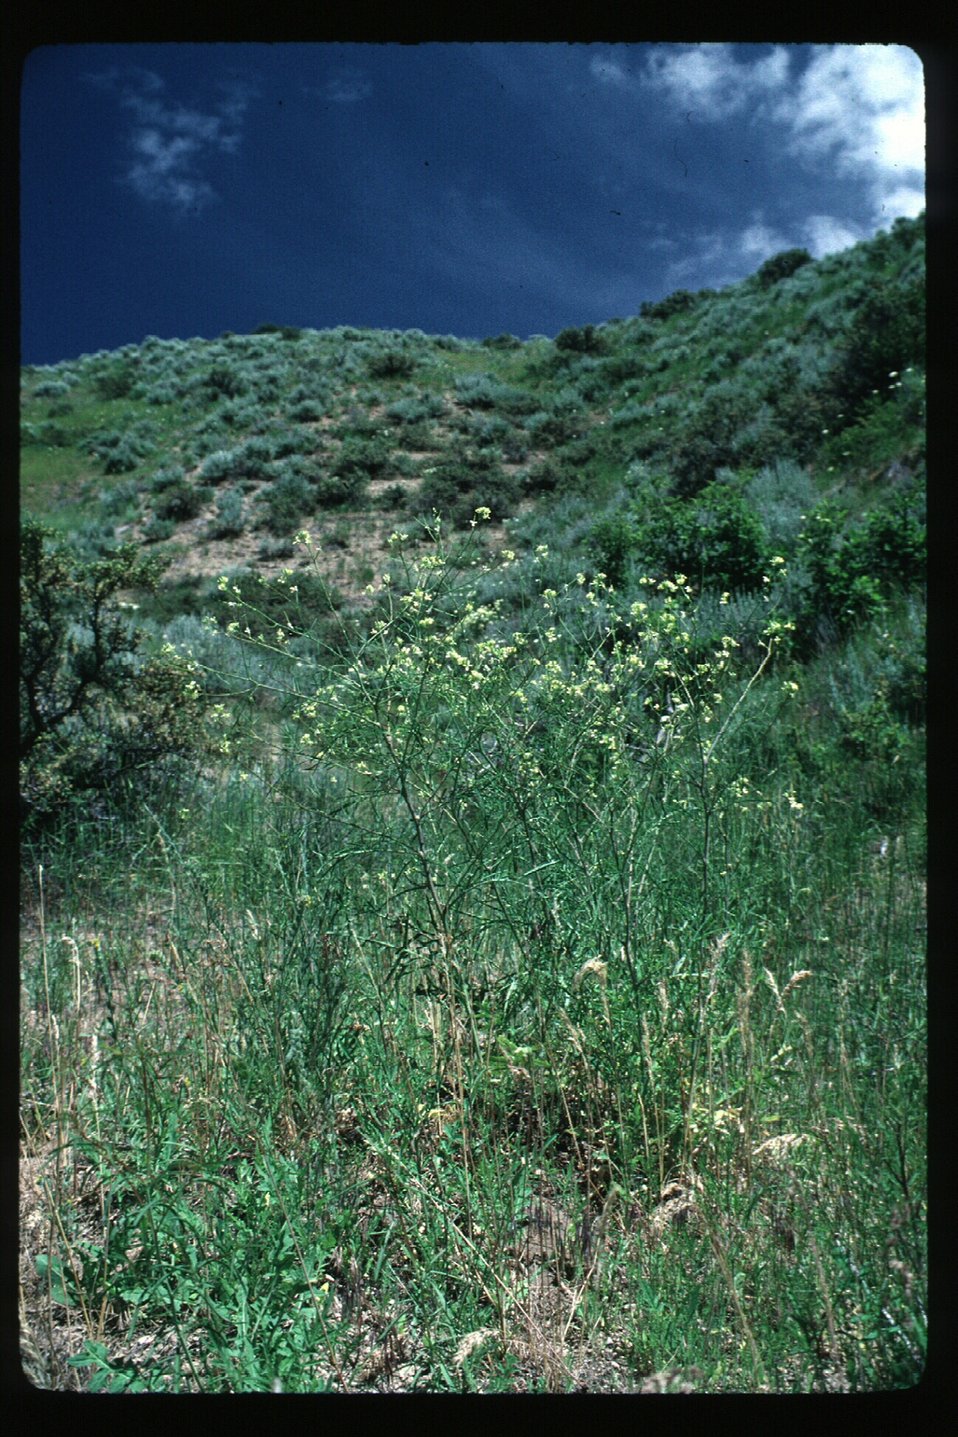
Rocky Canyon Boise Foothills Four Rivers Field Office LSRD Lower Snake River District